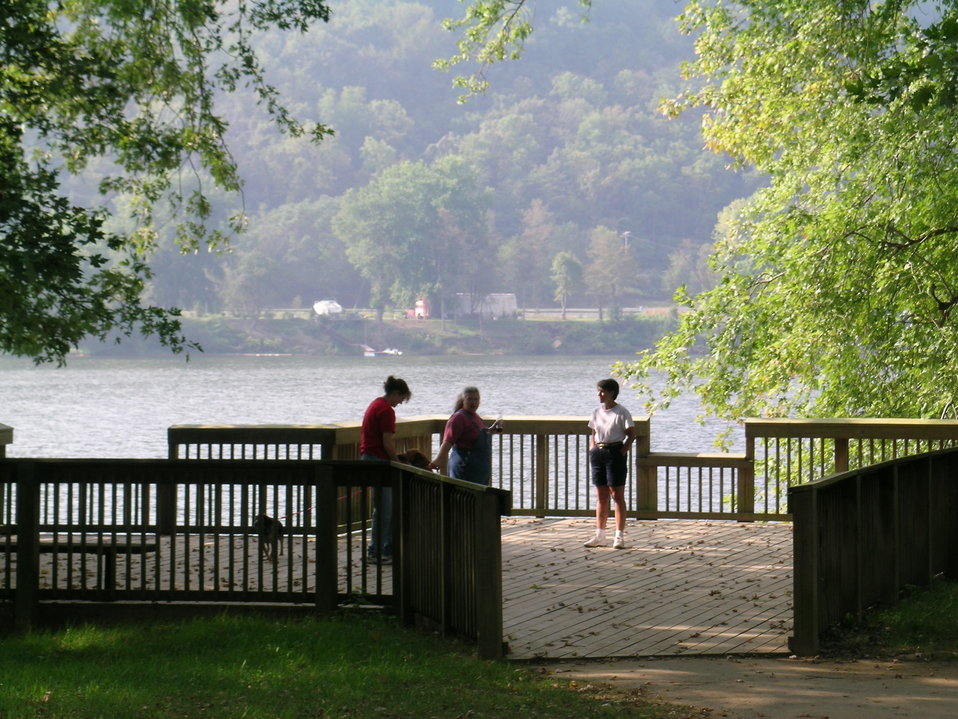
The Veterans Day fee waiver provides the perfect opportunity to take in the last of the fall colors for 2010, like this scenic view on the Wayne NF's Ironton Ranger District in southeast Ohio.